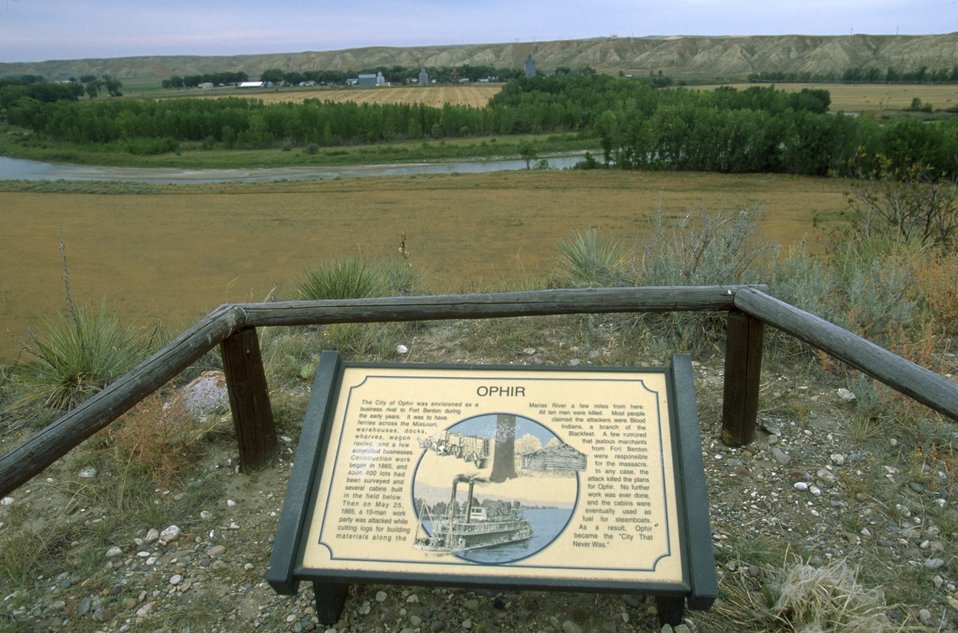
Interpretive sign Ophir site